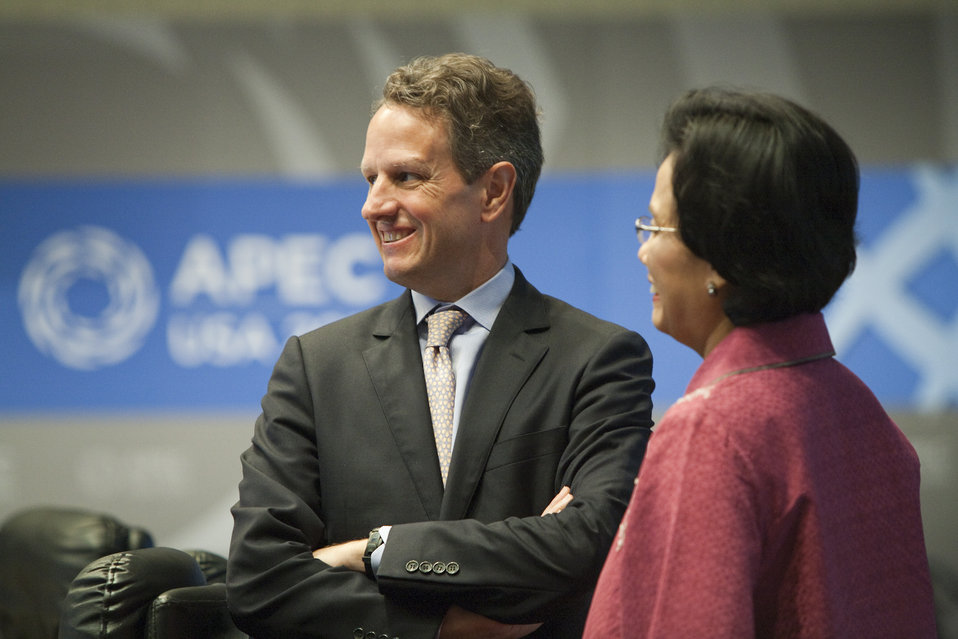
APEC Meeting of Finance Ministers

Treasury Secretary Tim Geithner and Managing Director of the World Bank Sri Mulyani Indrawati between working sessions at the APEC meeting of finance ministers in Honolulu, HI.